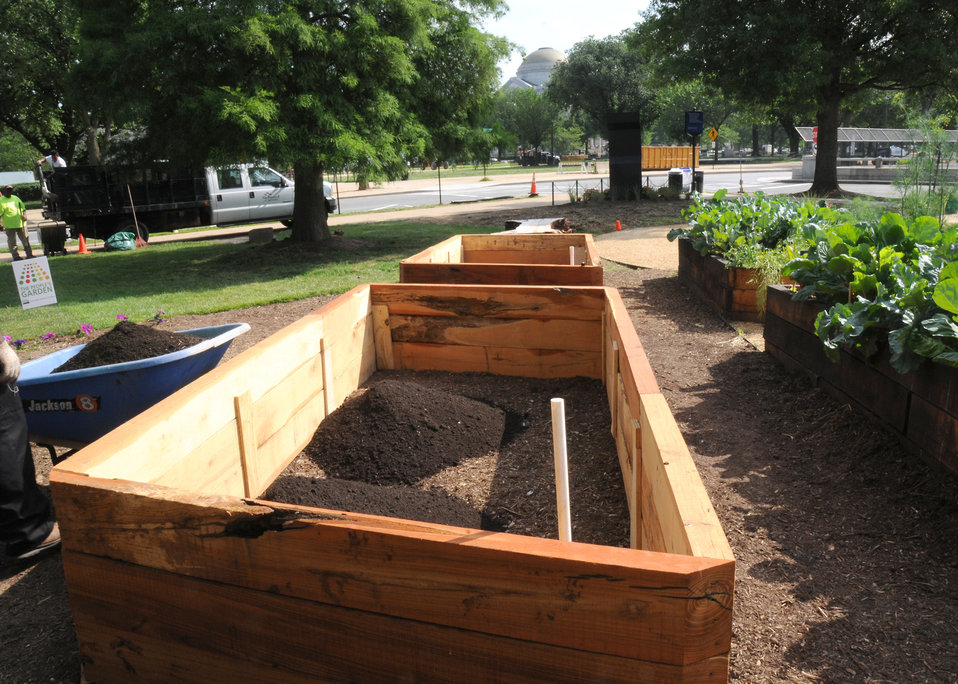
On Friday, May 28, 2010 the Department of Agriculture People’s Garden in Washington, DC, prepares new planting beds for New Mexico chiles. USDA photo 10di1383-40.